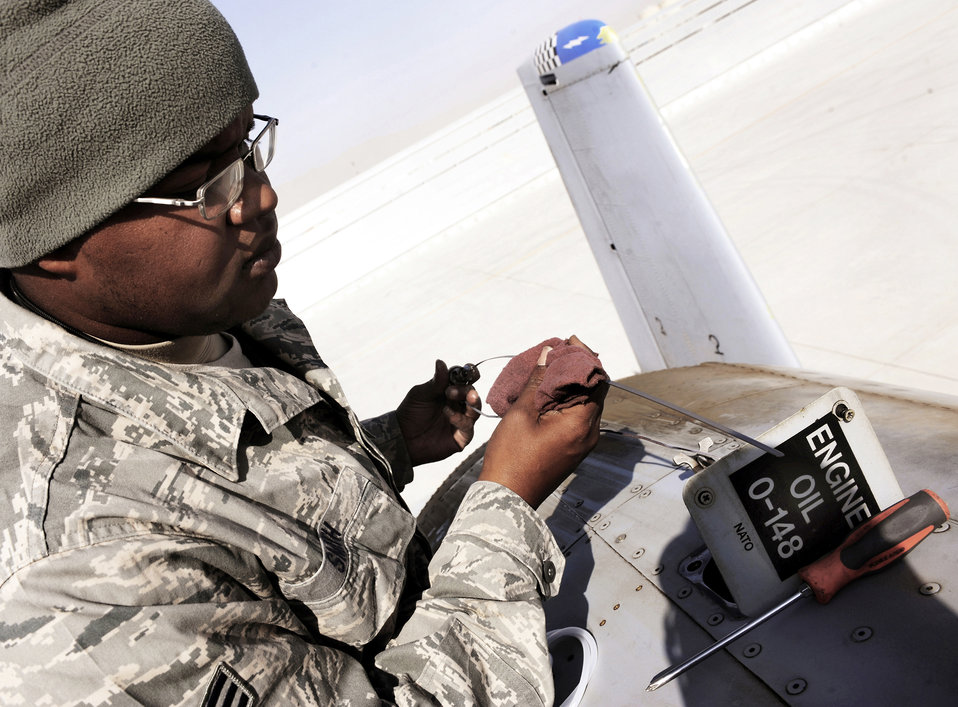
Kandahar flying mission consolidation

Senior Airman Christopher Smith checks the dipstick of an A-10C Thunderbolt II, Jan. 11, 2011, at Kandahar Airfield, Afghanistan. The 75th Expeditionary Fighter Squadron recently moved their assets to the other side of the flightline, marking the first of many moves toward consolidating the wing's missions. Airman Smith is a crew chief assigned to the 451st Expeditionary Aircraft Maintenance Squadron.